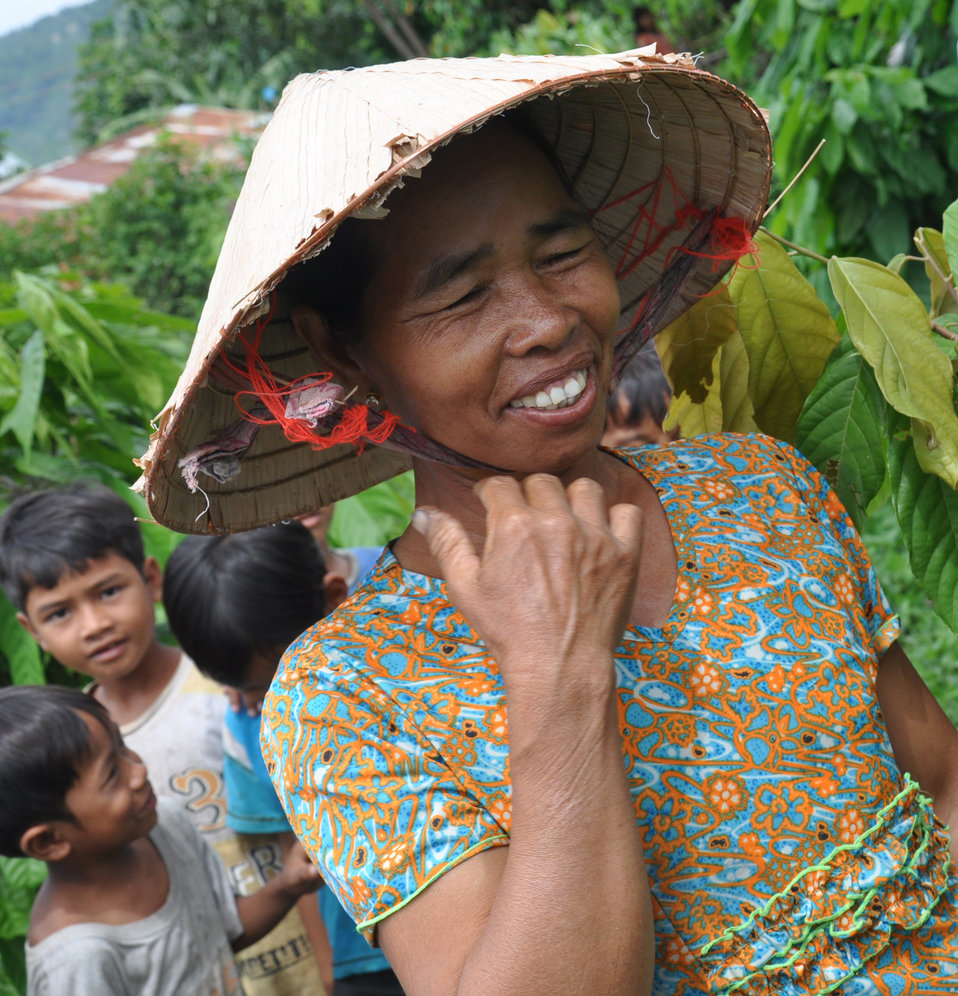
USAID supports cocoa farmer families in Dak Lak, Vietnam